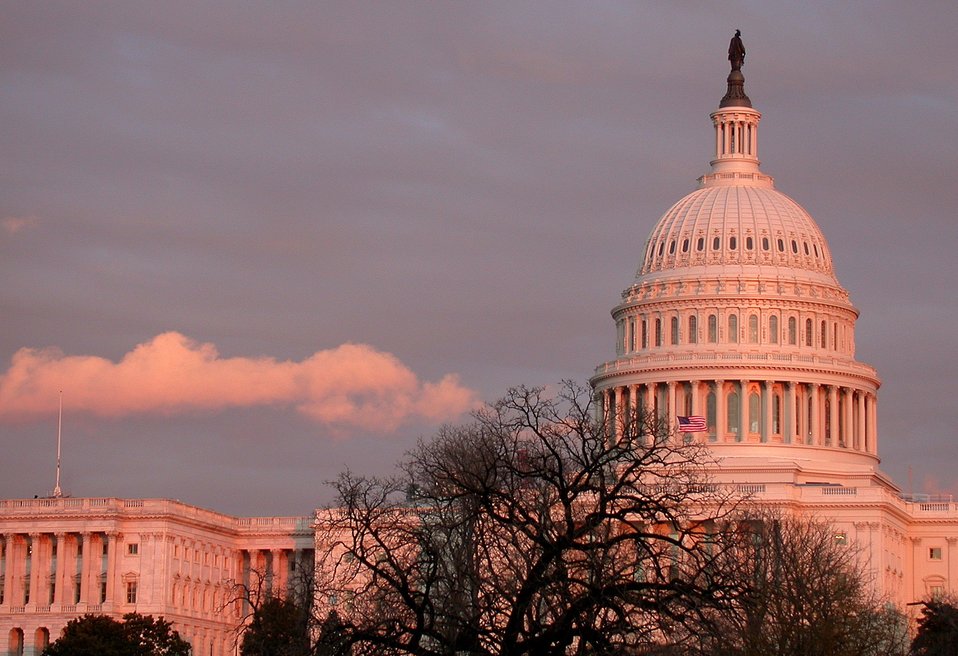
United States Capitol building.